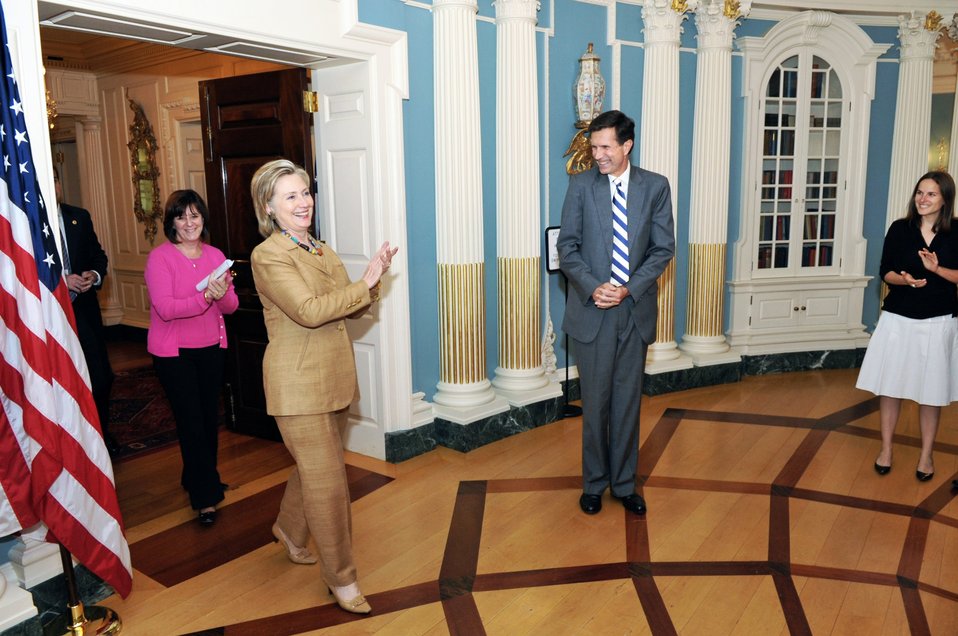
Secretary Clinton Shows Her Gratitude to Assistant Secretary Blake and Bureau of South and Central Asian Affairs Staff

U.S. Secretary of State Hillary Rodham Clinton shows her gratitude to U.S. Assistant Secretary for South and Central Asian Affairs Robert O. Blake and staff from the Bureau of South and Central Asian Affairs involved in the U.S.-India Strategic Dialogue at the U.S. Department of State in Washington, D.C., on June 11, 2010.